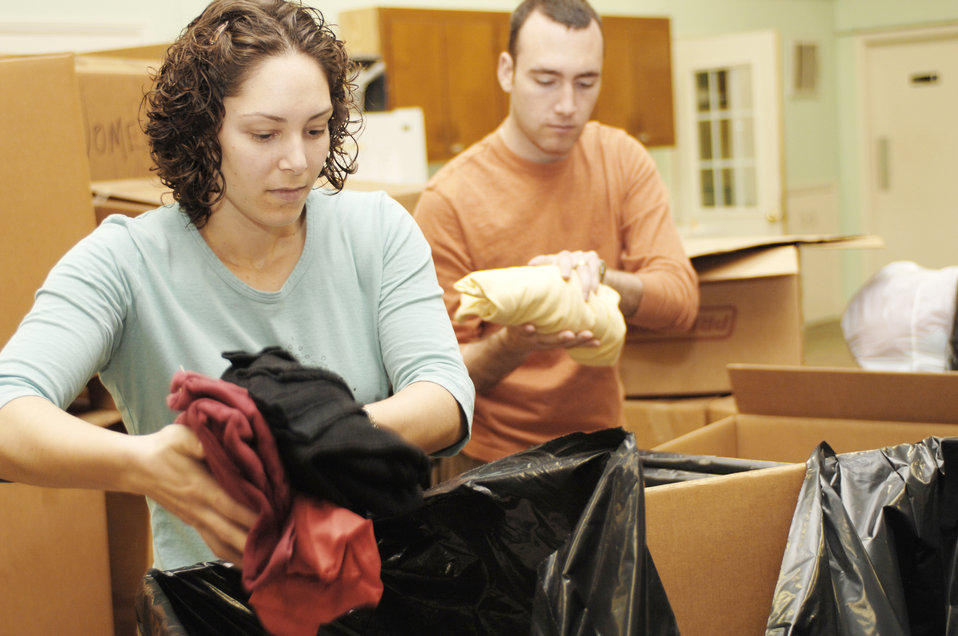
Airmen aid Stop Hunger Now

Beth Teegarden and her husband, Capt. Conor Teegarden, package winter clothing into large bags headed to Afghanistan during the Stop Hunger Now event Oct. 24, 2009, at the MERCI Mission Center in Goldsboro, N.C. The event transpired as an idea from the Seymour Johnson Air Force Base, N.C., chaplains and the Rev. Billy Olsen, a Pine Forest United Methodist Church pastor in North Carolina, as a way to bring together members of the base and local community. Captain Teegarden is a 333rd Fighter Squadron weapon system officer.